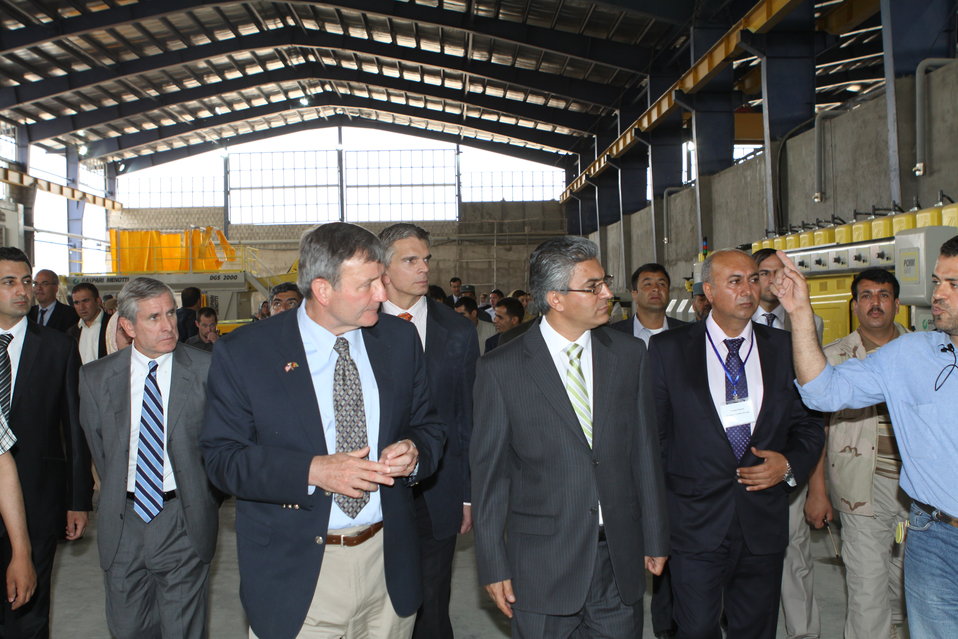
100525 Hirat Marble Conference 405